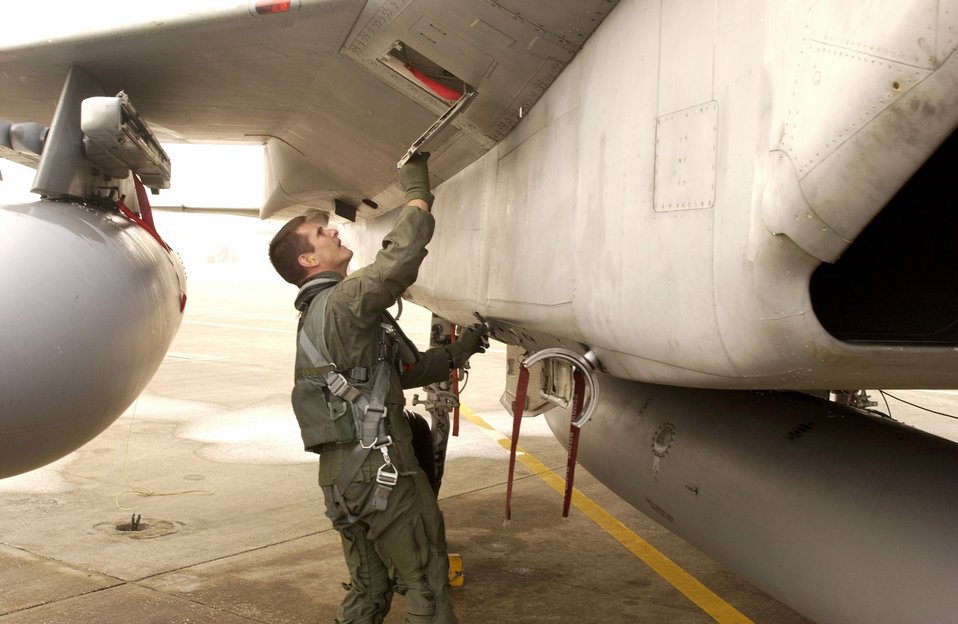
Flight preparation

JACKSONVILLE AIR NATIONAL GUARD BASE, Fla. (AFPN) -- Maj. Chris Bembenick performs a pre-flight inspection on an F-15 Eagle before a morning launch here Jan. 22. Major Bembenick is with the 125th Fighter Wing. The wing is participating in an operational readiness exercise to help ensure the unit is capable of deploying personnel and equipment safely and efficiently.